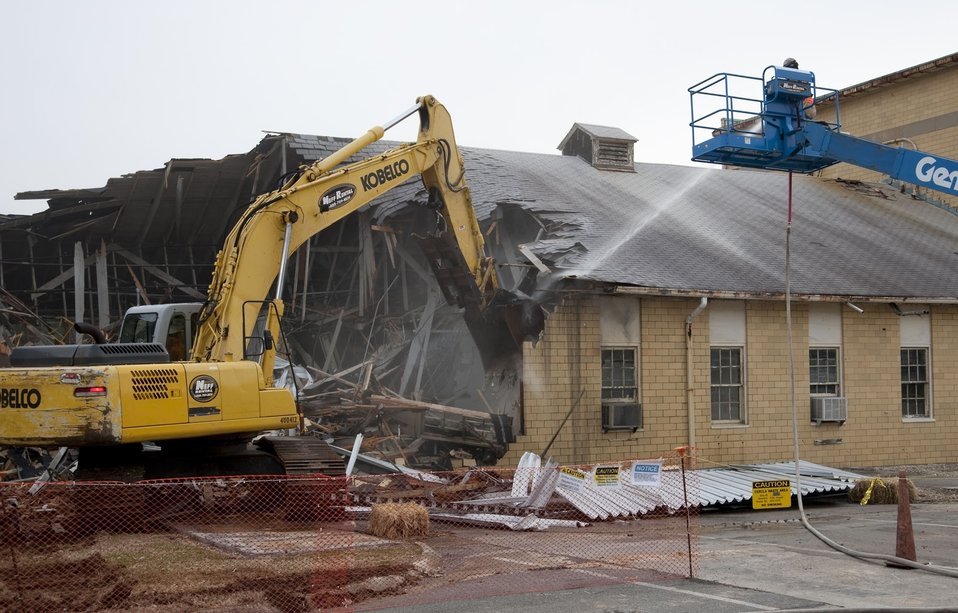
First ARRA-Funded Demolition Takes Down Last Building in “Engineering Row”

It’s not often one project represents both a first and a last milestone, but this week the demolition of Building 9735 at Y-12 National Security Complex did just that.

The demolition of Building 9735, the first Y‑12 demolition project funded by the American Recovery and Reinvestment Act (ARRA), started Monday, Feb. 8, and was completed the same day.

“The waste will be disposed of in the coming weeks, and the entire project will be completed four months ahead of schedule,” said Jim Blair, B&W Y-12’s project manager for ARRA deactivation and demolition (D&D) projects at the site.